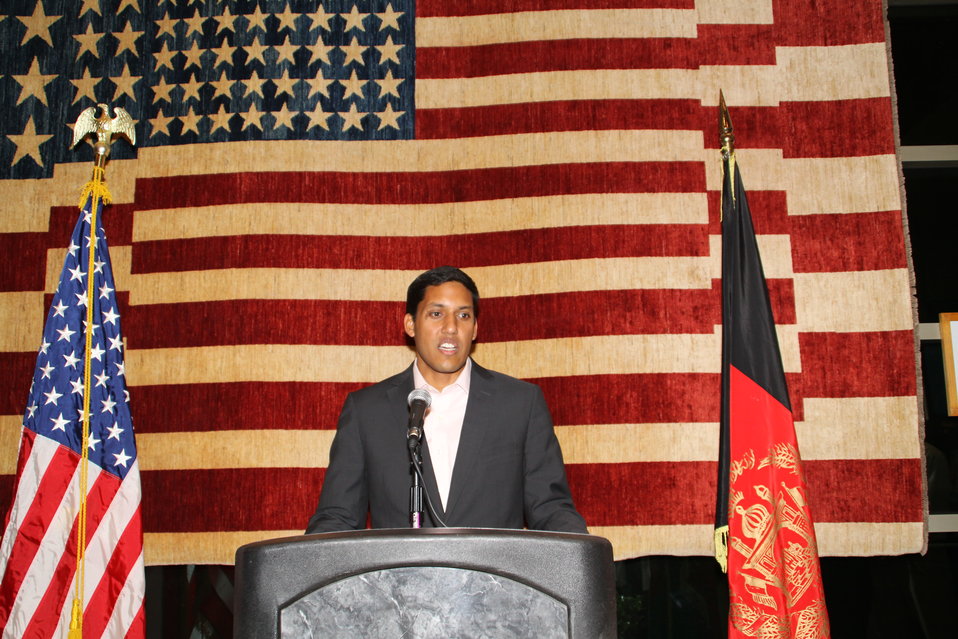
US Embassy Town Hall July 21, 2010